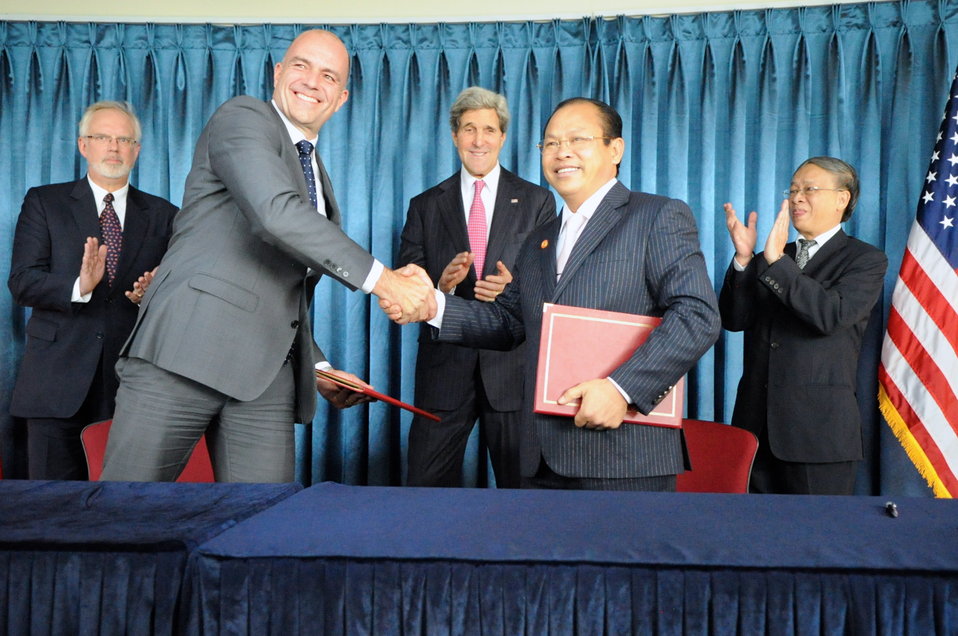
Secretary Kerry Lauds GE Windfarm Deal

U.S. Secretary of State John Kerry applauds as General Electric and Cong Ly officials complete signing an agreement to purchase new wind farm equipment in Ho Chi Minh City, Vietnam, on December 14, 2013.